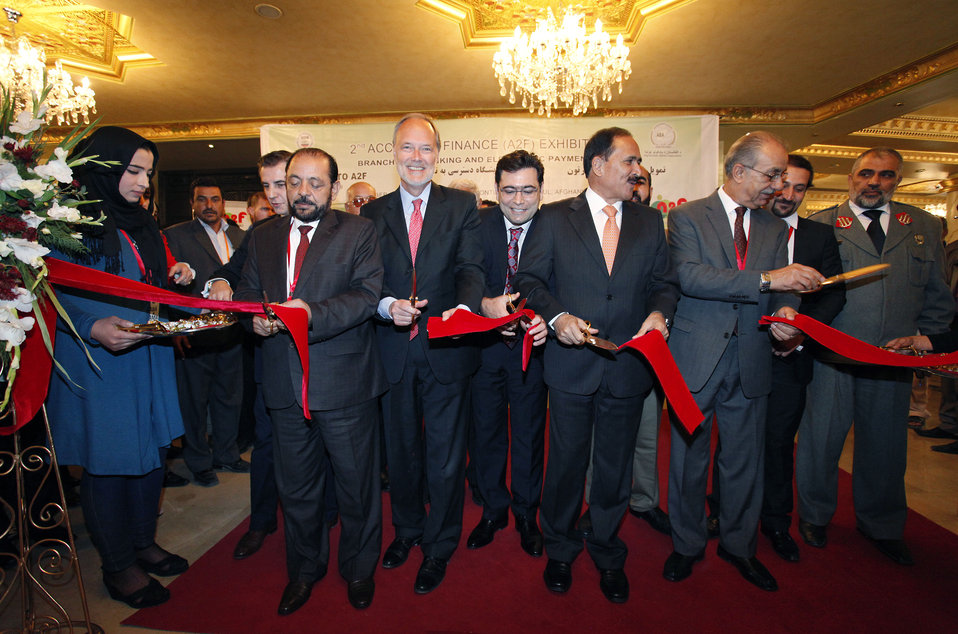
Access to Finance Exhibition in Kabul

U.S. Ambassador James B. Cunningham and Afghan financial leaders cut a ribbon to kick off the Second Access to Finance Exhibition in Kabul on Tuesday, October 29, 2013. Thousands of business representatives from across Afghanistan attended the exhibition promoting branchless banking and electronic payments.